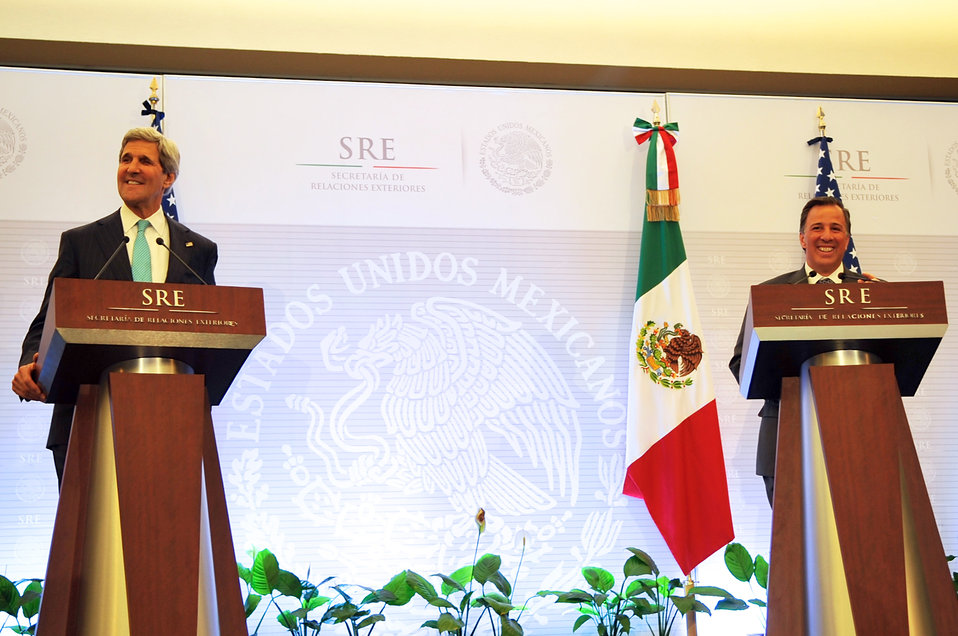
Secretary Kerry, Mexican Foreign Secretary Meade Laugh During Joint News Conference in Mexico City

U.S. Secretary of State John Kerry and Mexican Foreign Secretary José Antonio Meade share a laugh during a breakdown in translation services during a joint news conference that followed a series of meetings in Mexico City on May 21, 2014.